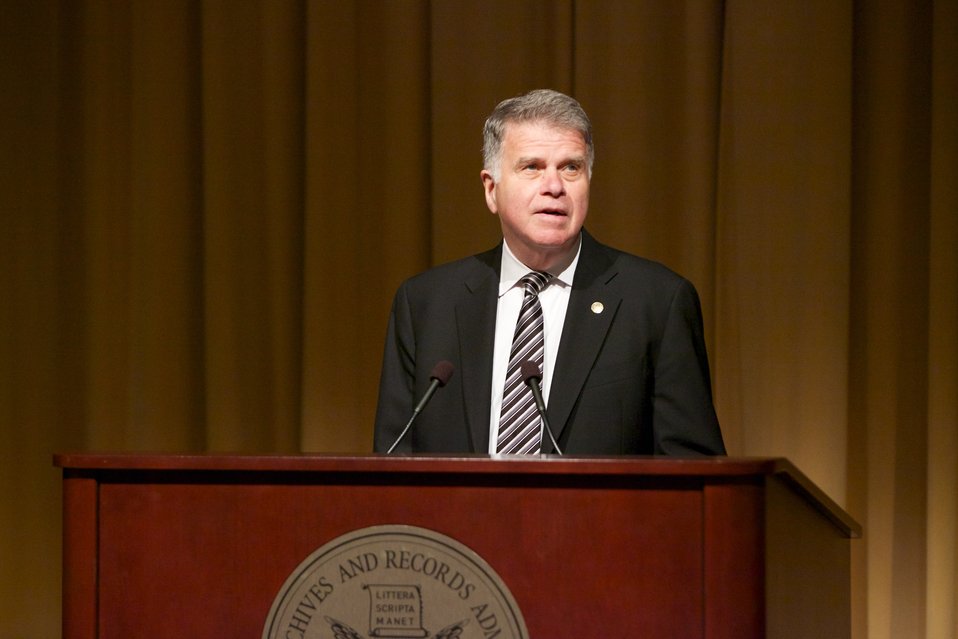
I Heard My Country Calling: A Memoir: David Ferriero, Archivist of the United States, provides opening remarks